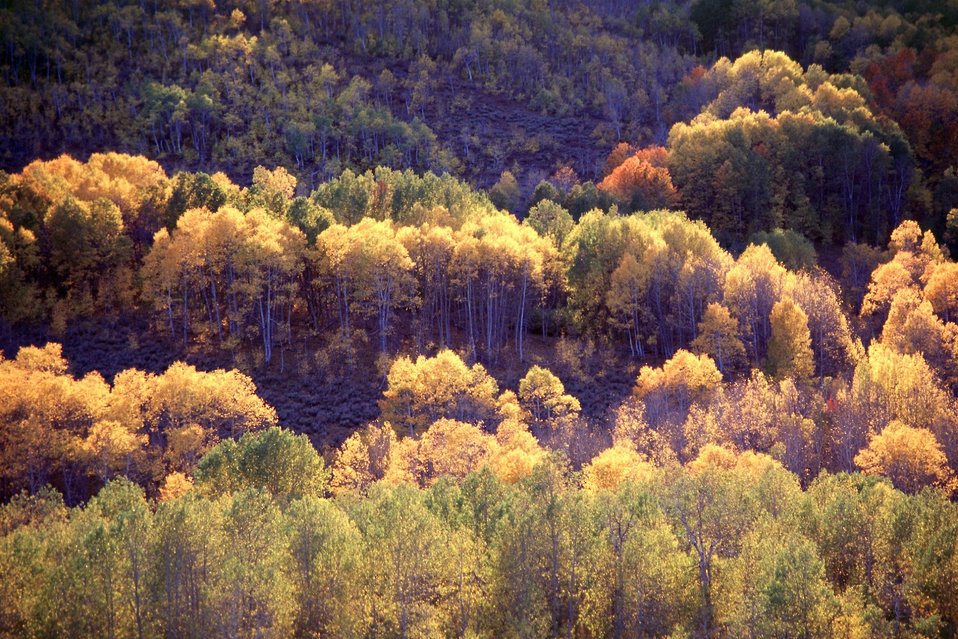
Aspens at sunset. Fish Creek, Steen's Mountain.